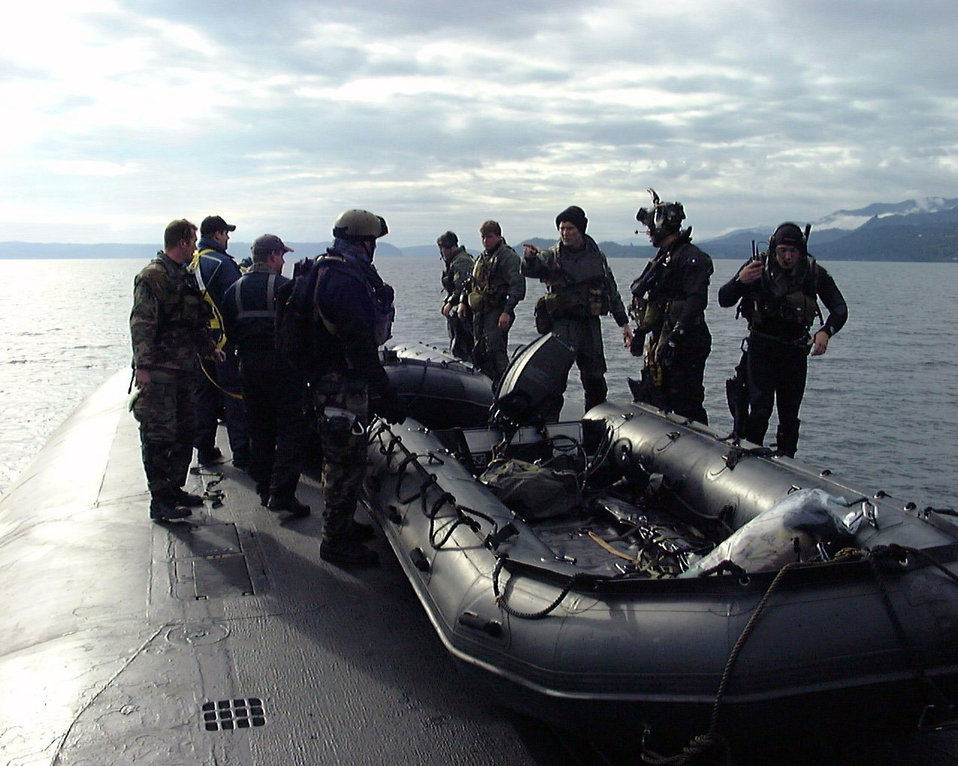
Submarine training

ONBOARD USS ALABAMA (AFPN) -- Airmen with the 22nd and 23rd Special Tactics squadrons launch an inflatable boat into the Pacific Ocean during an exercise. The exercise tested special operations infiltration and rescue tactics. The joint effort also tested the capabilities of the Ohio-class ballistic missile submarines, which enter service next year. The submarines are being converted from ballistic missile submarines to guided missile submarines with new capabilities.